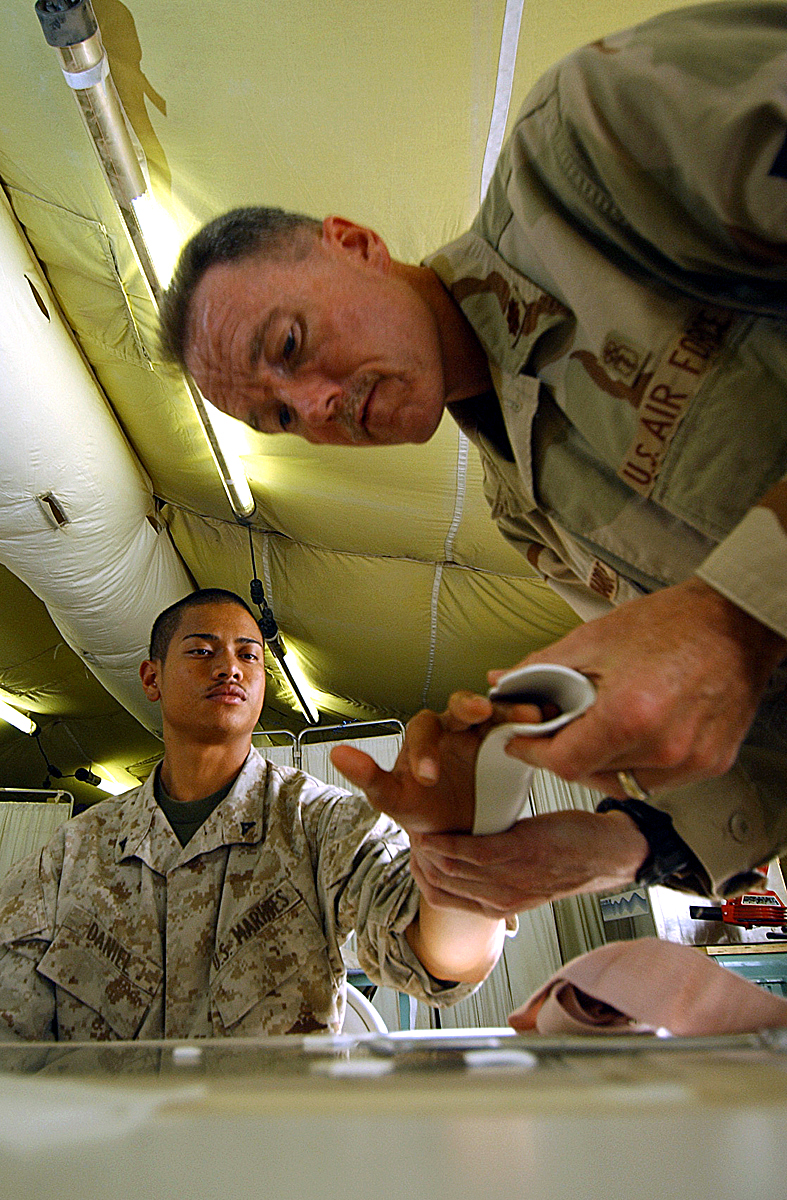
Physical medicine team keeps 'sprains and strains' down

BALAD AIR BASE, Iraq -- Maj. Peter Reinhardt fits a splint for Marine Lance Cpl. Kai Daniel, who was visiting the Air Force theater hospital here from Tikrit. Major Reinhardt is an occupational therapist with the 332nd Expeditionary Medical Group here.